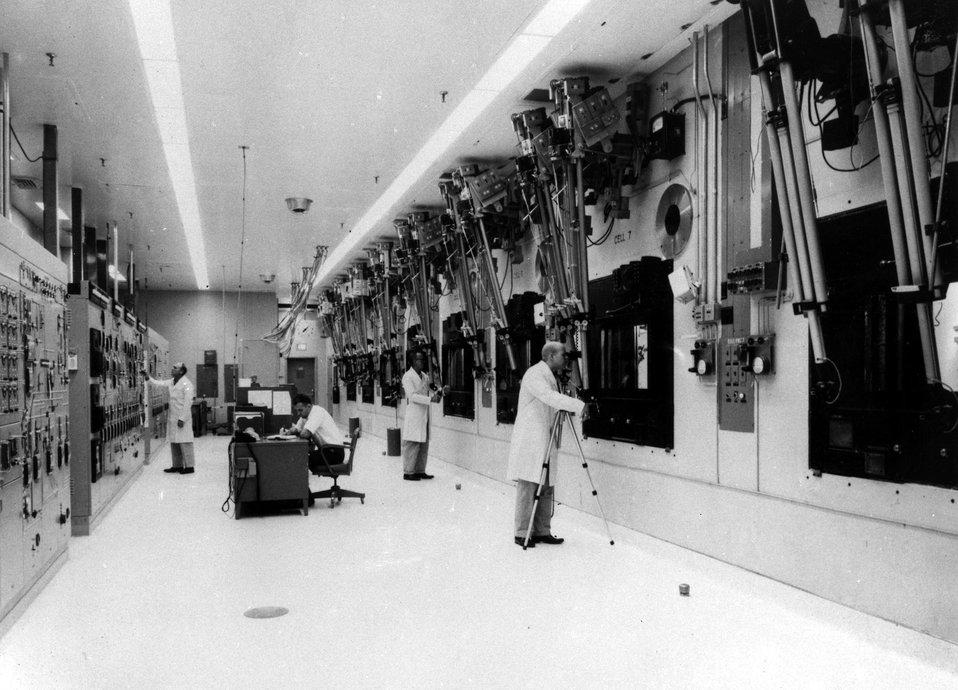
This photo shows the operating area in the Trans-uranium Processing Plant (TRU) Facility. c. 1967